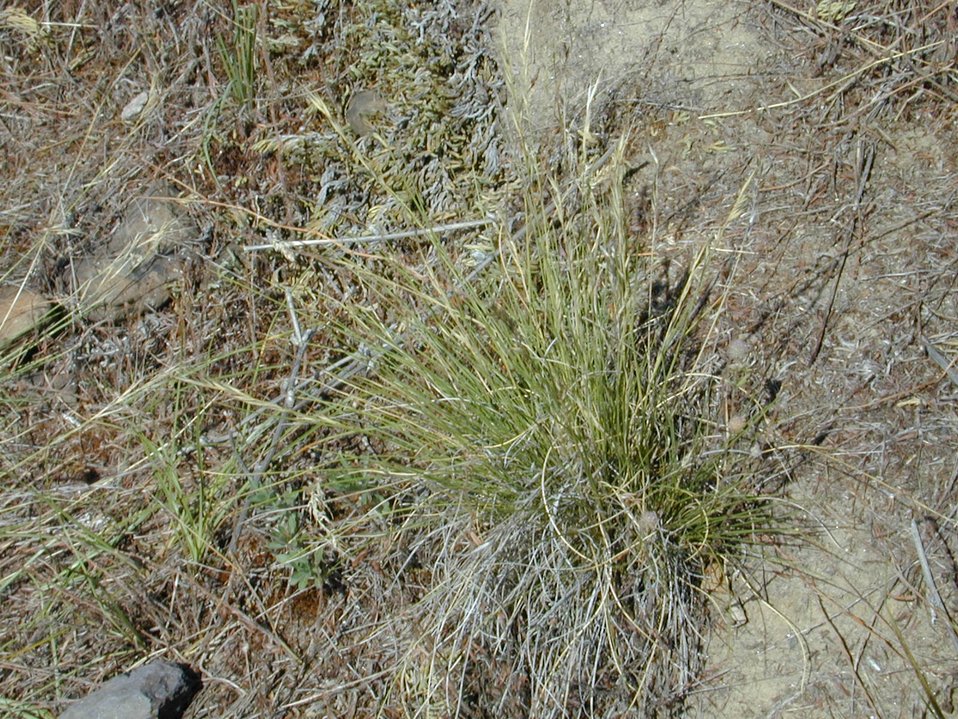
Bluebunch Wheatgrass Cottonwood Field Office UCSC Upper Columbia Salmon Clearwater District